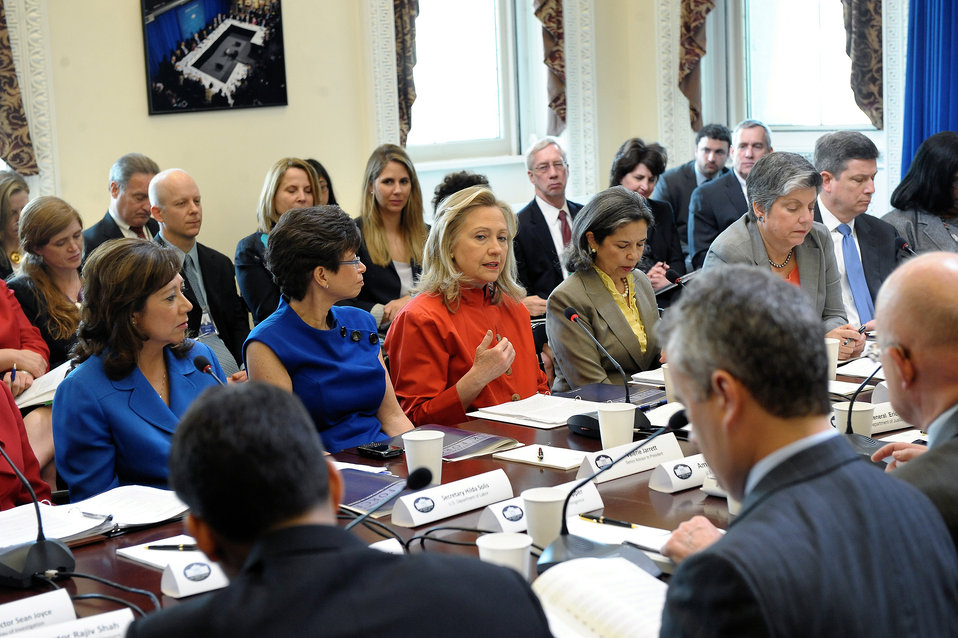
Secretary Clinton Chairs the Interagency Task Force to Monitor and Combat Trafficking in Person

U.S. Secretary of State Hillary Rodham Clinton chairs the President’s Interagency Task Force to Monitor and Combat Trafficking in Persons in Washington, D.C. on March 15, 2012.